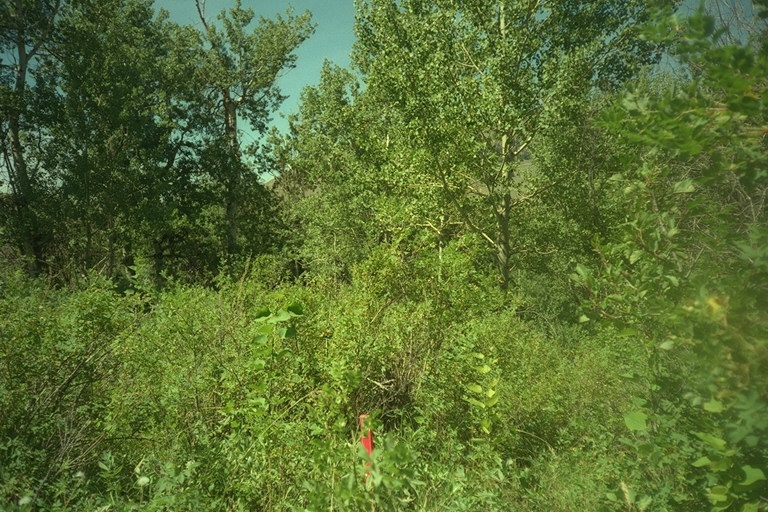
Riparian area Public Lands Salmon Field Office UCSC Upper Columbia Salmon Clearwater District